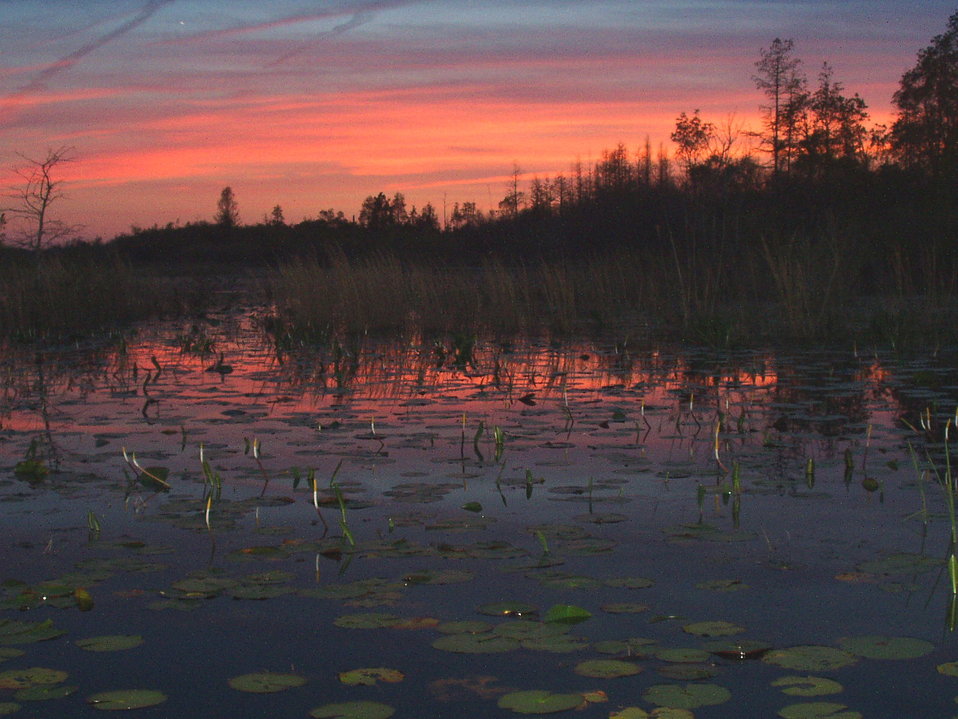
Okefenokee Sunset

Chesser Prairie. Okefenokee National Wildlife Refuge.